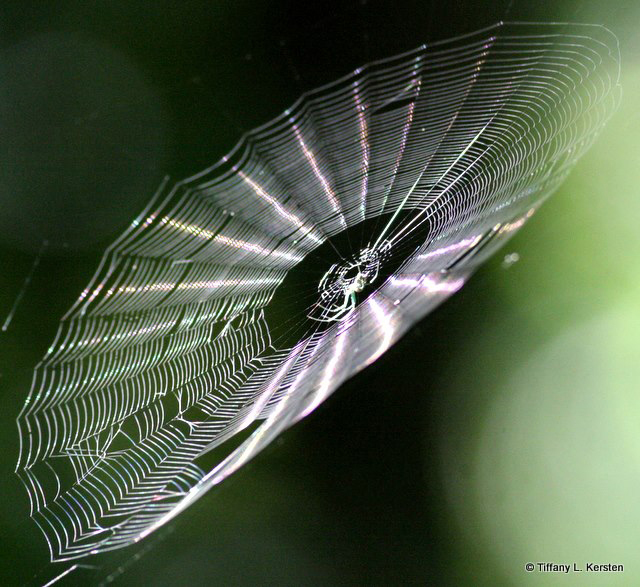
Photo of the Week - Venusta Orchard Spider (NJ)

Photo of the week - December 3, 2012

Venusta Orchard Spider photographed at the deCamp Wildlife Trail at Edwin B. Forsythe National Wildlife Refuge.